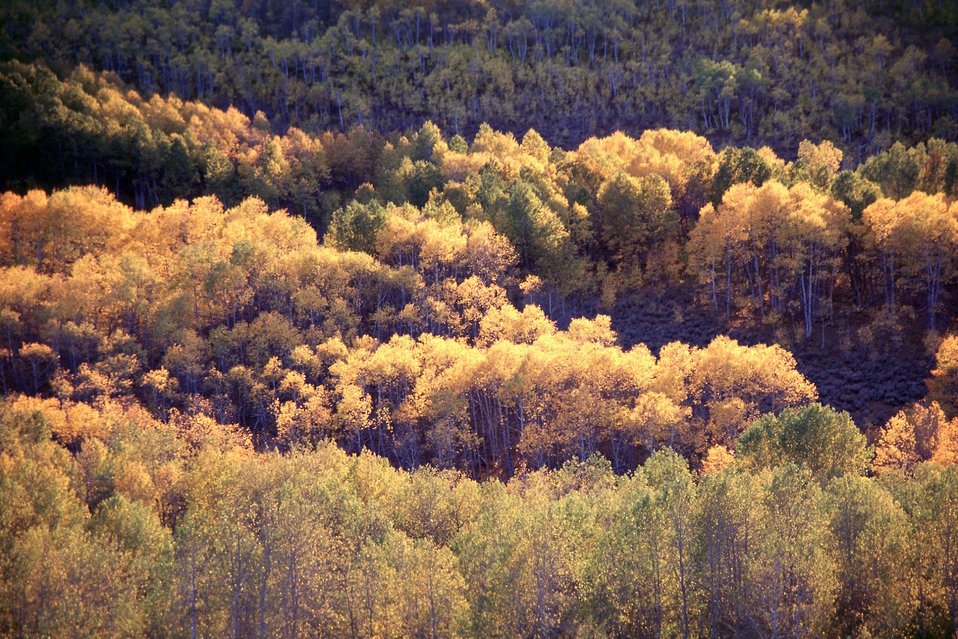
Aspens at sunset. Fish Creek, Steen's Mountain.